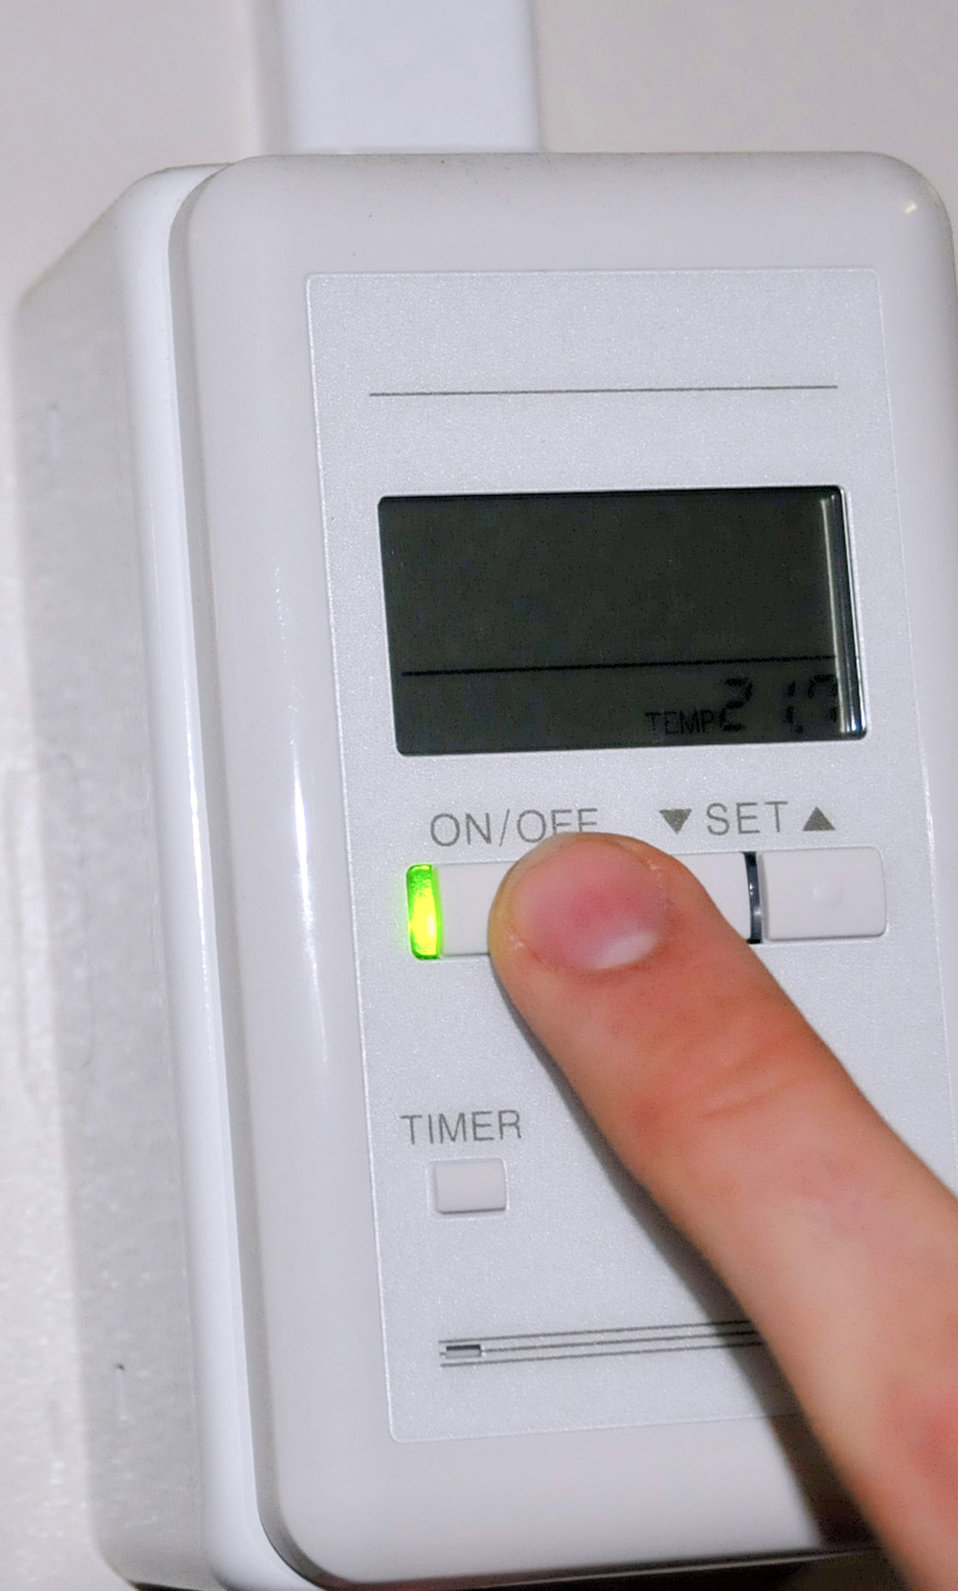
No heat, no cool

As part of the No Heat, No Cool program, the heating, ventilation and air conditioning systems in facilities were turned off April 18, 2011, to conserve energy at Yokota Air Base, Japan.